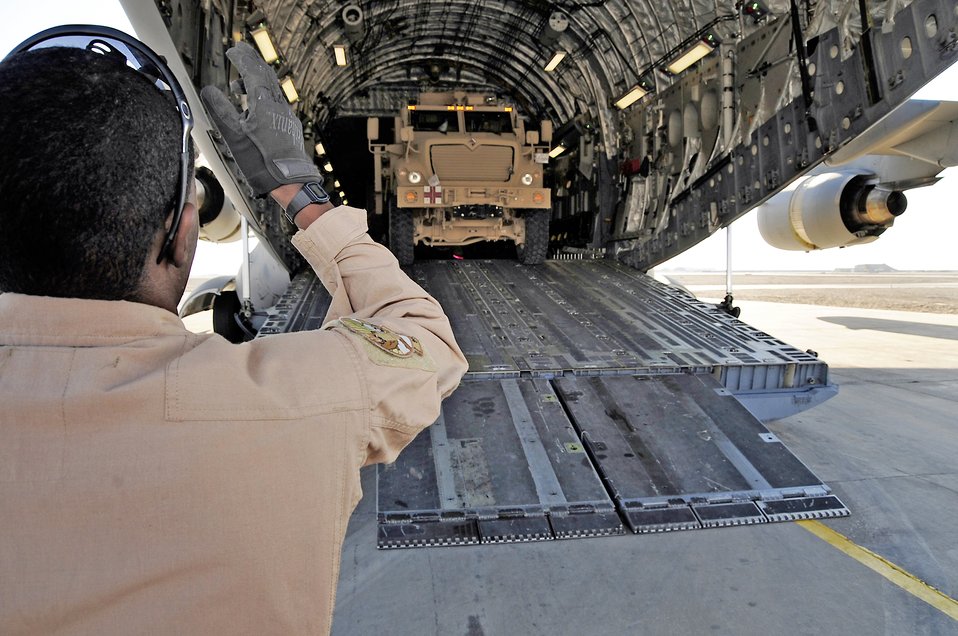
MRAP, go on back

Crew chief Airman 1st Class Raheem Crockett guides a mine-resistant ambush protected vehicle as it's loaded to a C-17 Globemaster III on the Ali Base, Iraq, airfield Dec. 1, 2009. This MRAP along with others is being sent to American warfighters in Afghanistan in support of Operation Enduring Freedom.